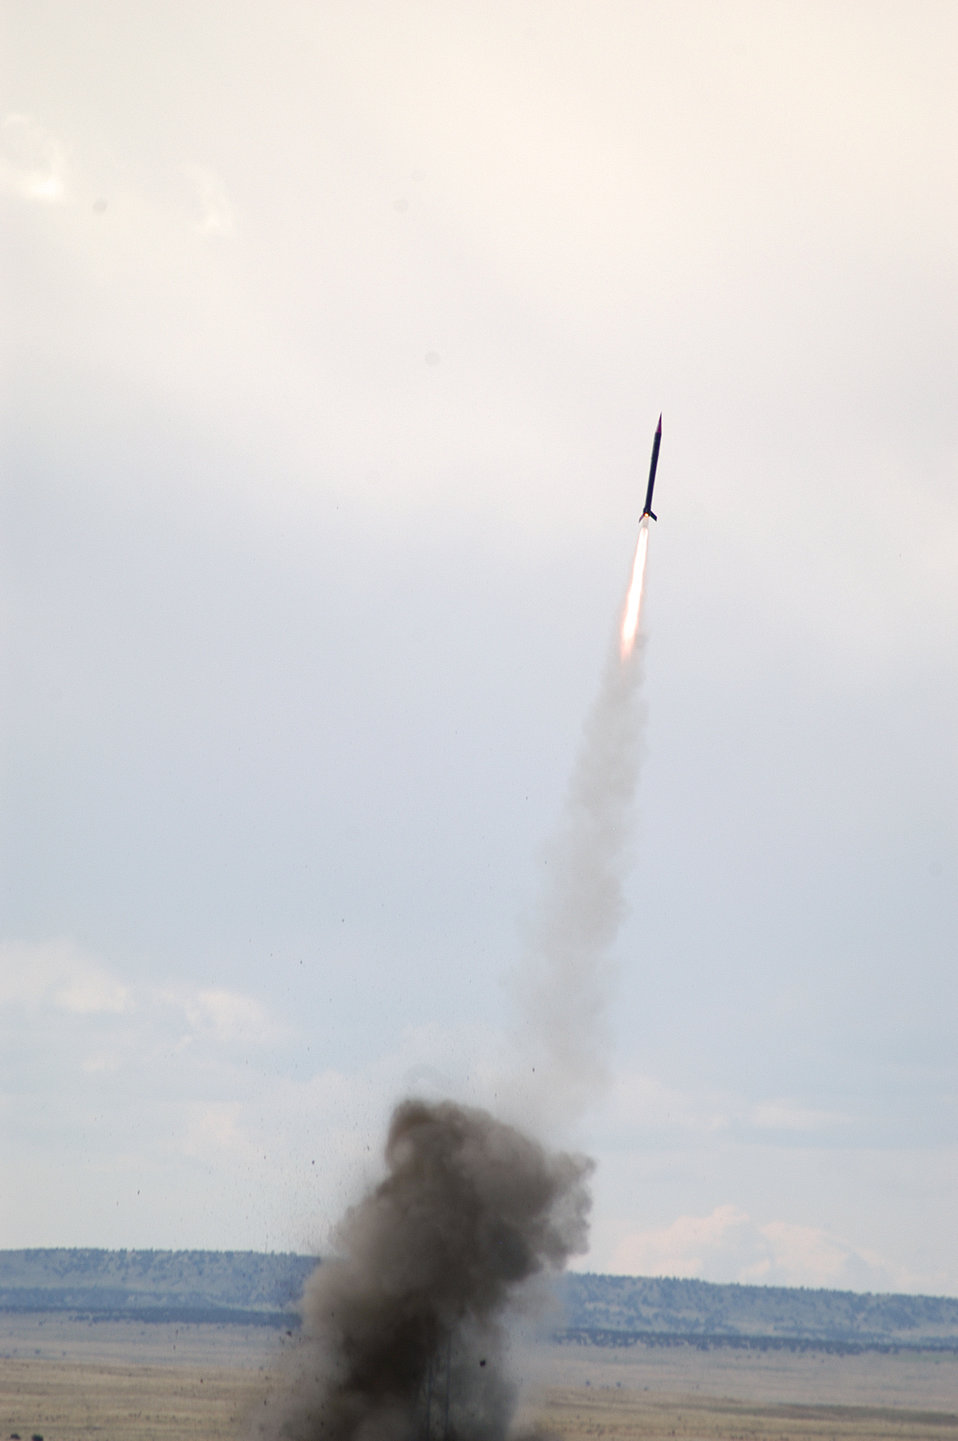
Rocket-powered final exam launches

PINON CANYON MANUEVER RANGE, Colo. -- The FalconLaunch rocket lifts off to reach 13,400 feet above the ground in 33 seconds April 30. During the program, cadets design, manage, build and launch a rocket as part of the Air Force Academy's Department of Astronautics course. The program progresses each academic year, with the eventual goal of creating a rocket which can deliver a 5-pound scientific or experimental payload to an altitude of about 60 miles.